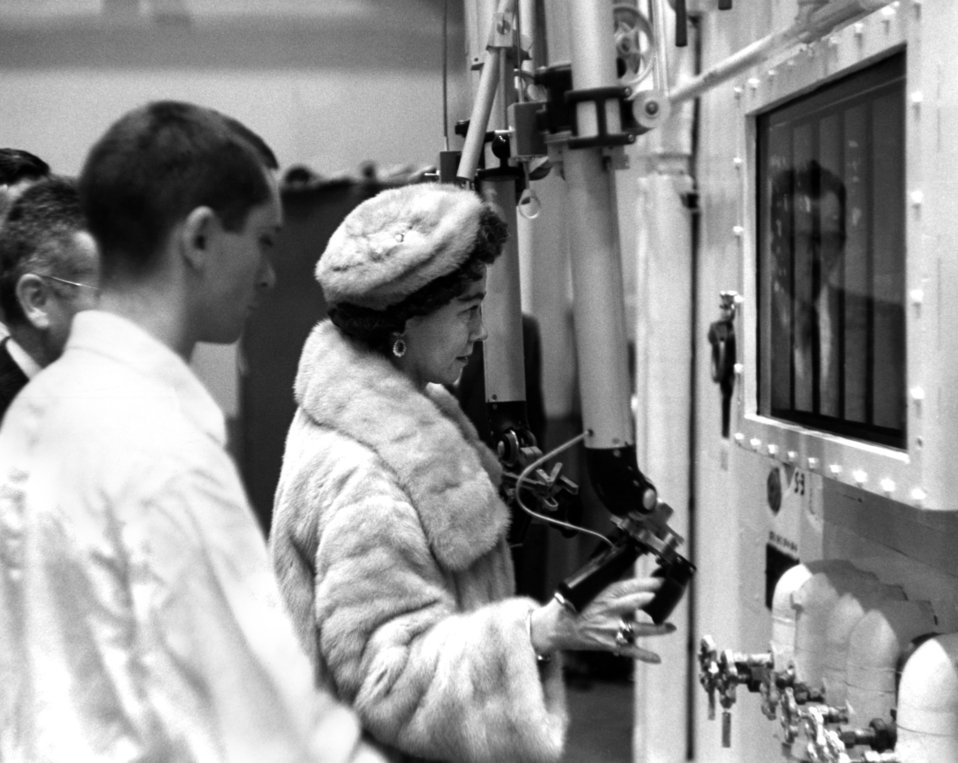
Queen Federika at ORNL

58-1006 DOE photo Ed Westcott 11-7-1958 Oak Ridge Tennessee